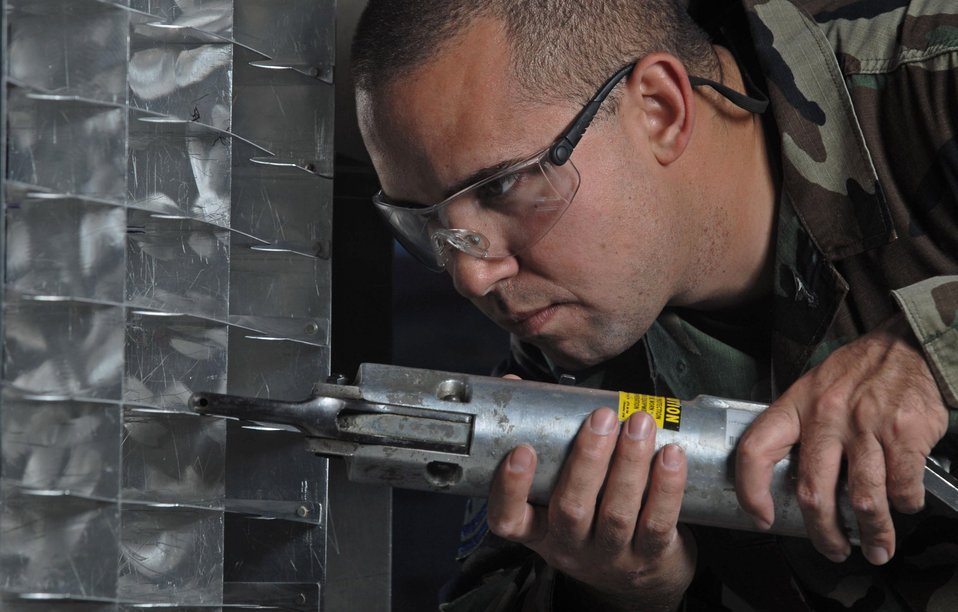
Metal mania

Tech. Sgt. Brad Rosario uses a rivet squeezer on a KC-135 Stratotanker technical order cabinet while modifying the cabinet Nov. 28 at March Air Reserve Base, Calif. In addition to being the home of the Air Force Reserve Command's largest air mobility wing, the base hosts units from the Army, Navy and Marine Corps Reserve, and the Air National Guard. Sergeant Rosario is an aircraft structural maintenance technician from the 452nd Maintenance Squadron.